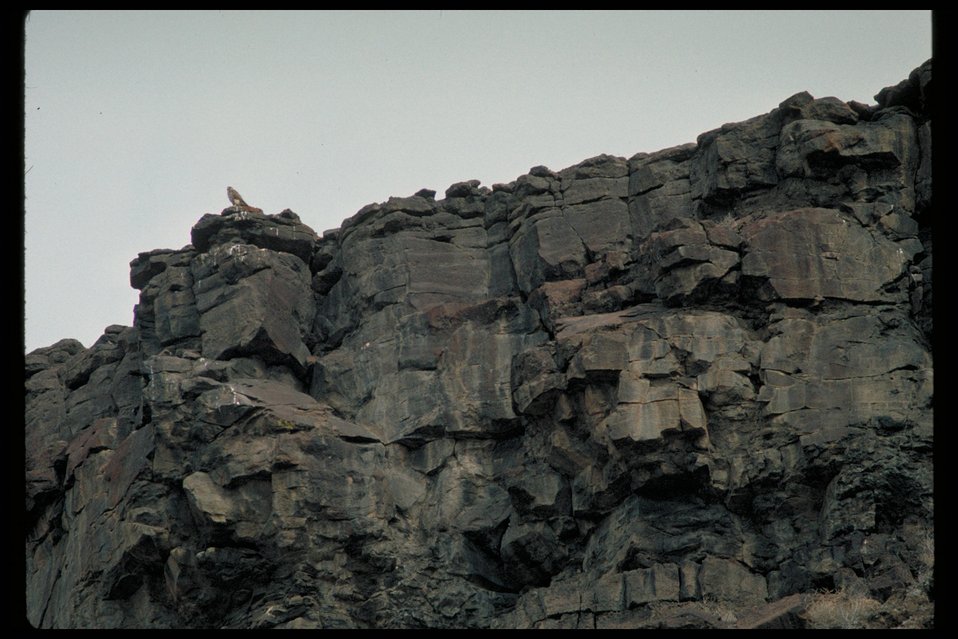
Birds of Prey National Conservation Area BOP Owyhee Field Office LSRD Lower Snake River District